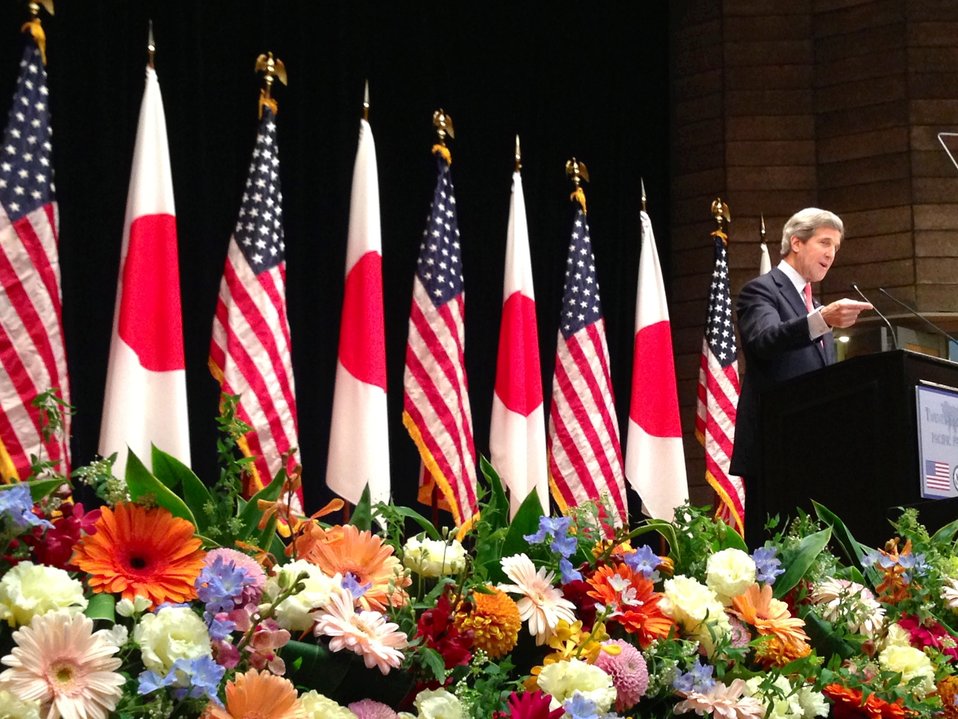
Secretary Kerry Speaks at Tokyo Institute of Technology

U.S. Secretary of State John Kerry delivers a speech about U.S.-Pacific relations at the Tokyo Institute of Technology in Tokyo, Japan, on April 15, 2013.